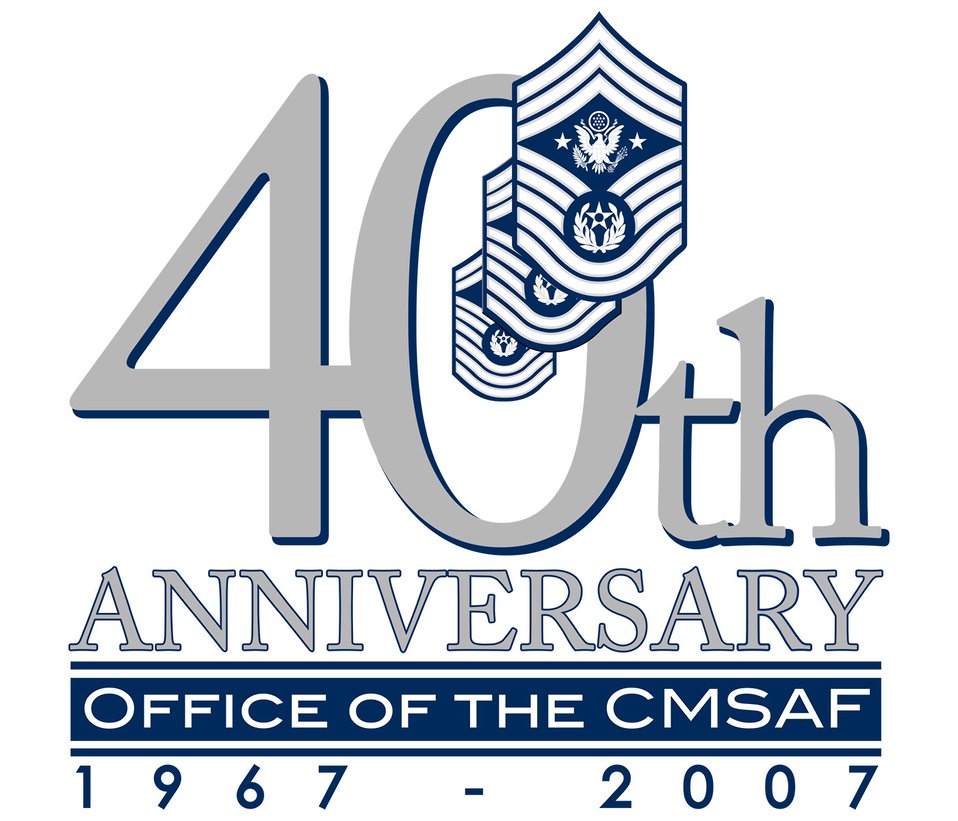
Air Force Enlisted's 1st top chief reflects on historic career

The logo noting the 40th anniversary of the office of the chief master sergeant of the Air Force. Chief Master Sgt. Paul Airey was the first chief master sergeant of the Air Force.